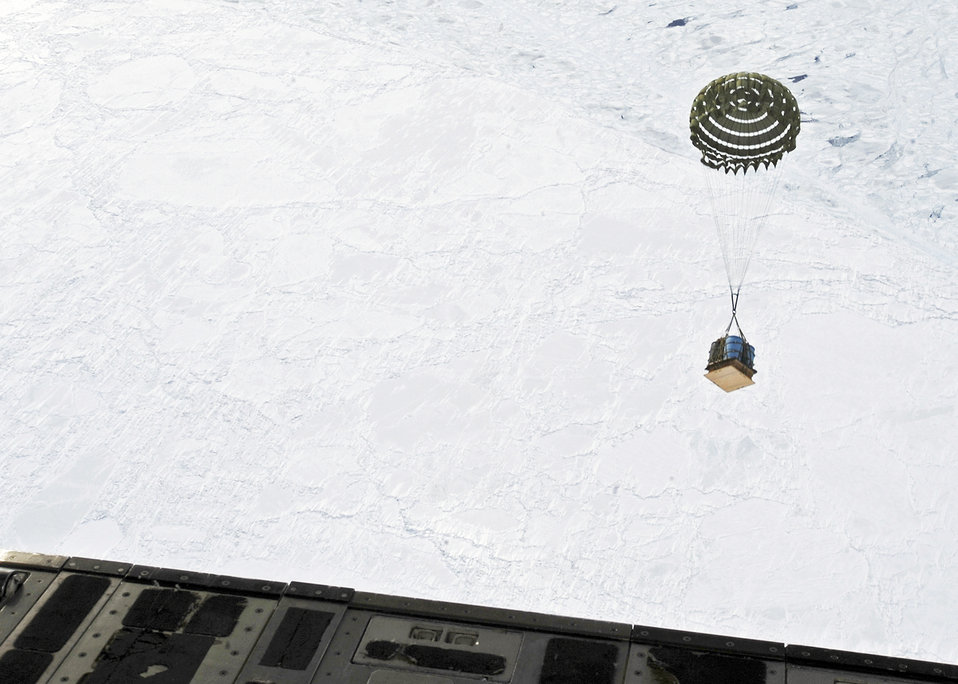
Elmendorf Airmen complete airdrop using 3-D weather technology

A crate of water is dropped from a C-17 Globemaster III March 19, 2010, at Elmendorf Air Force Base, Alaska. An aircrew from the 517th Airlift Squadron participated in a combat simulation improved container delivery drop over Tin City, Alaska.